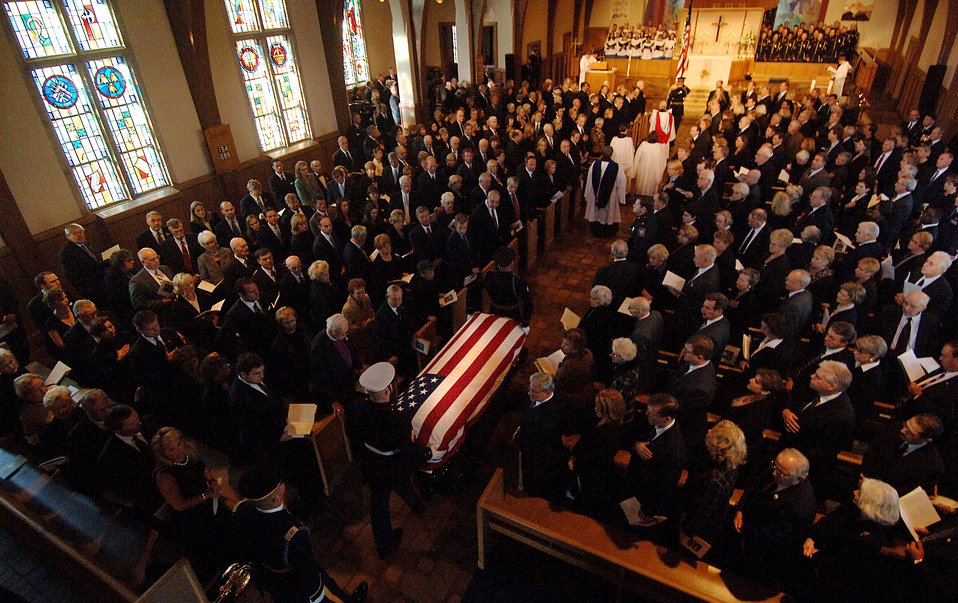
Last service

Armed Forces Honor Guard members bring the casket of former President Gerald R. Ford into the Grace Episcopal Church for his funeral service Jan. 3 in Grand Rapids, Mich.